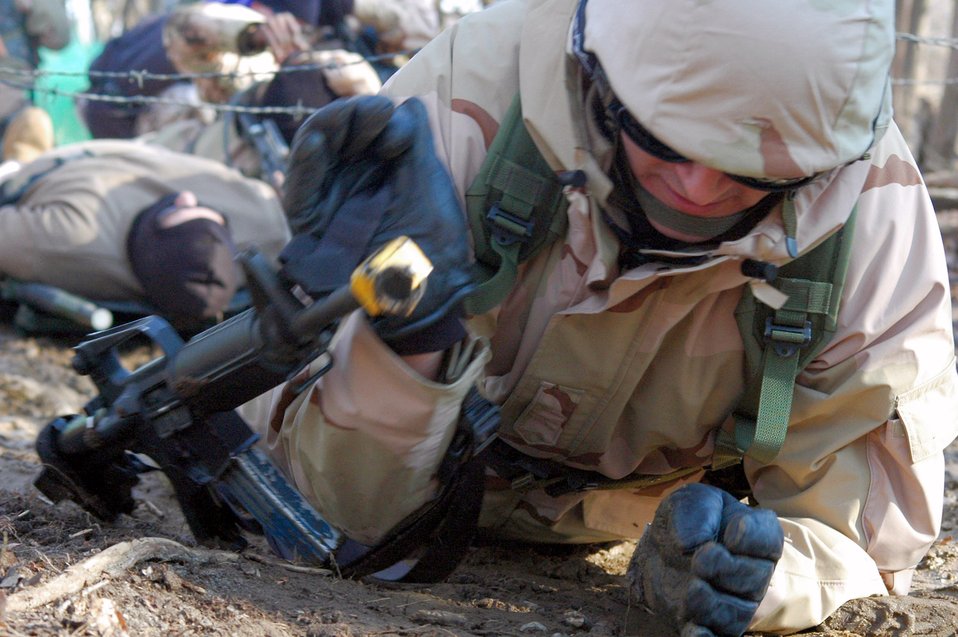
Airmen complete first Air Advisor Course

Students in the Air Force Expeditionary Center's Air Advisor Course 08-1 crawl under barbed wire as part of their training in the combat first aid obstacle course during training Feb. 29 on a range on Fort Dix, N.J. Taught by Expeditionary Operations School officials, Air Force Expeditionary Center's Air Advisor Course 08-1 prepares Airmen deploying to Afghanistan and Iraq who will in turn be training military forces in those countries.